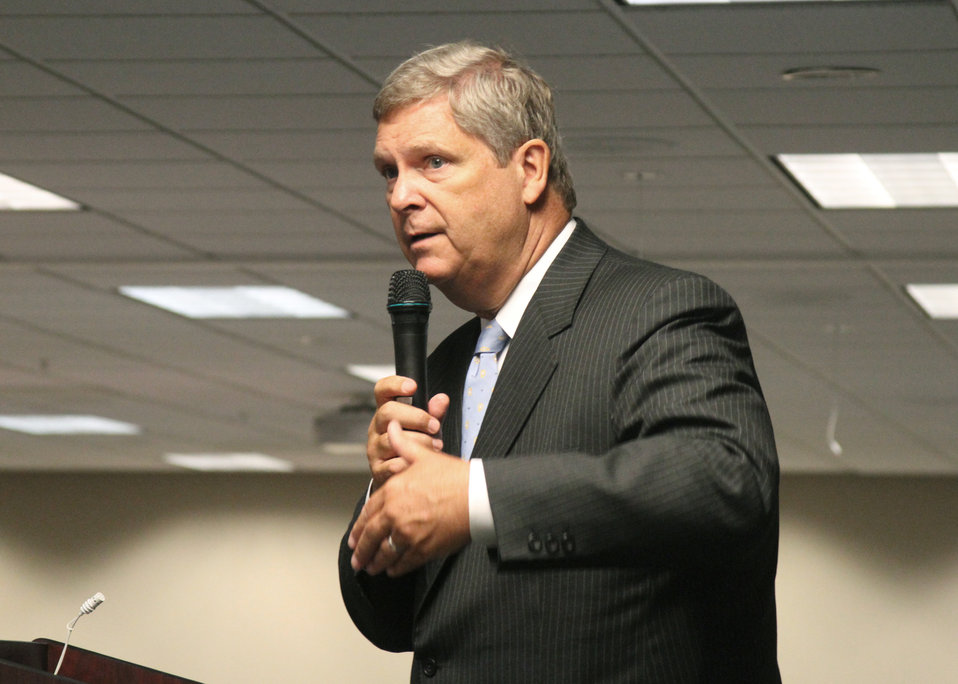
Agriculture Secretary Tom Vilsack a speaks with U.S. Department of Agriculture employees at the “Ask the Secretary” informal listening sessions as part of the Cultural Transformation initiative to transform the culture at USDA. Listening sessions are held at local field offices and provide employees an opportunity to talk directly to the secretary about issues, problems and solutions. This session was held at a USDA Service Center in Kansas City, MO, on Wednesday, July 27, 2011.